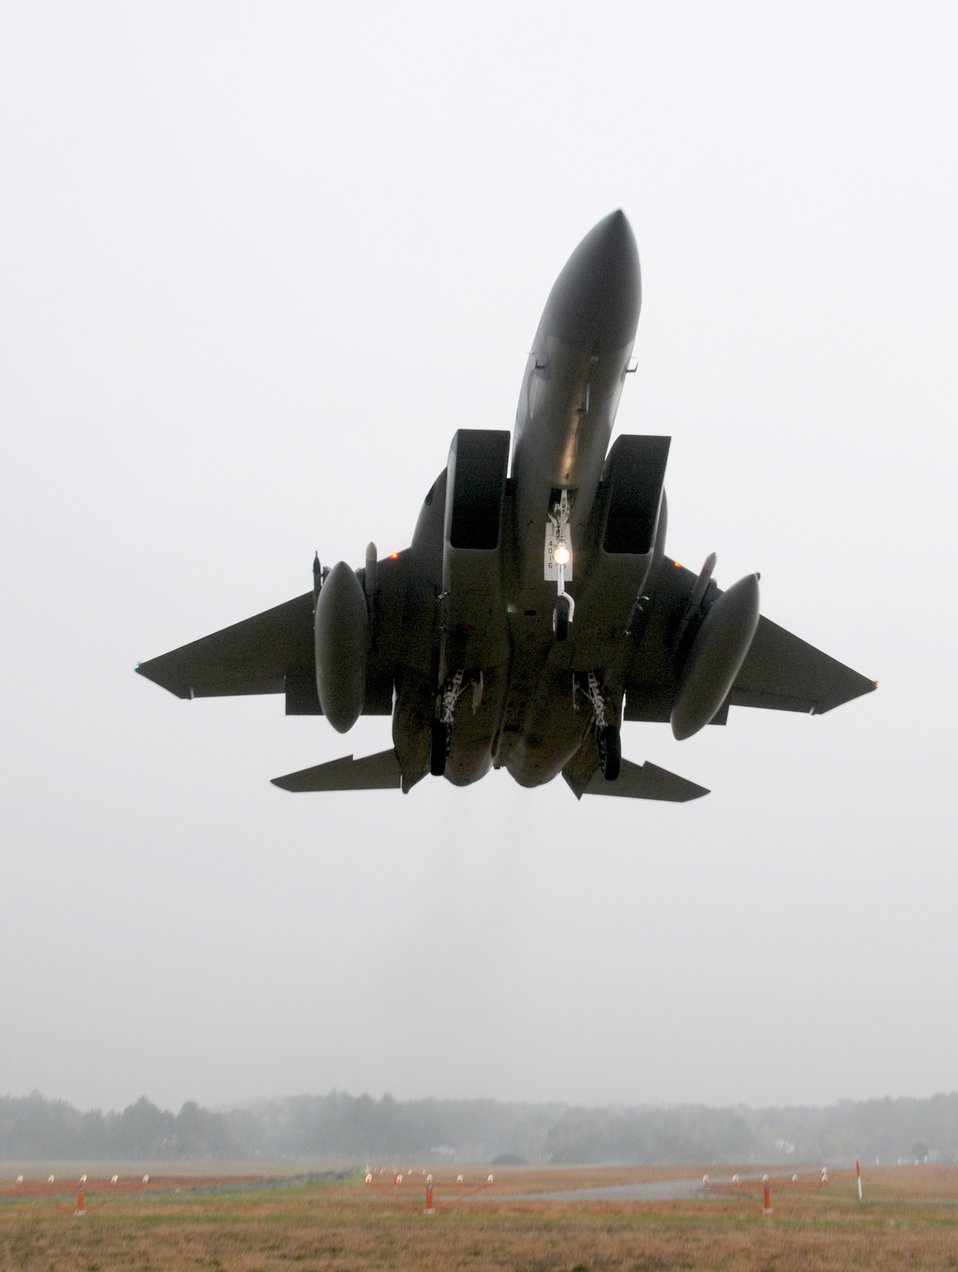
Training with the eagles

An F-15 Eagle takes to the air during a training mission Oct. 21, 2010, at the Barnes Air National Guard Base in Westfield, Mass. The Massachusetts Air National Guard's 104th Fighter Wing provides air sovereignty alert support, protecting the northeastern United States.